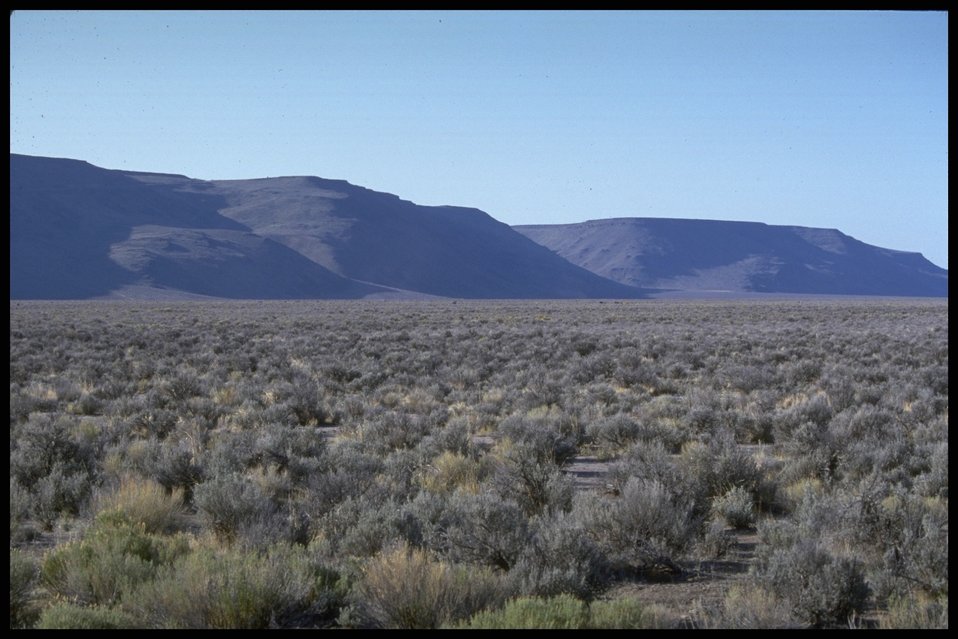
Lakeview District desert.